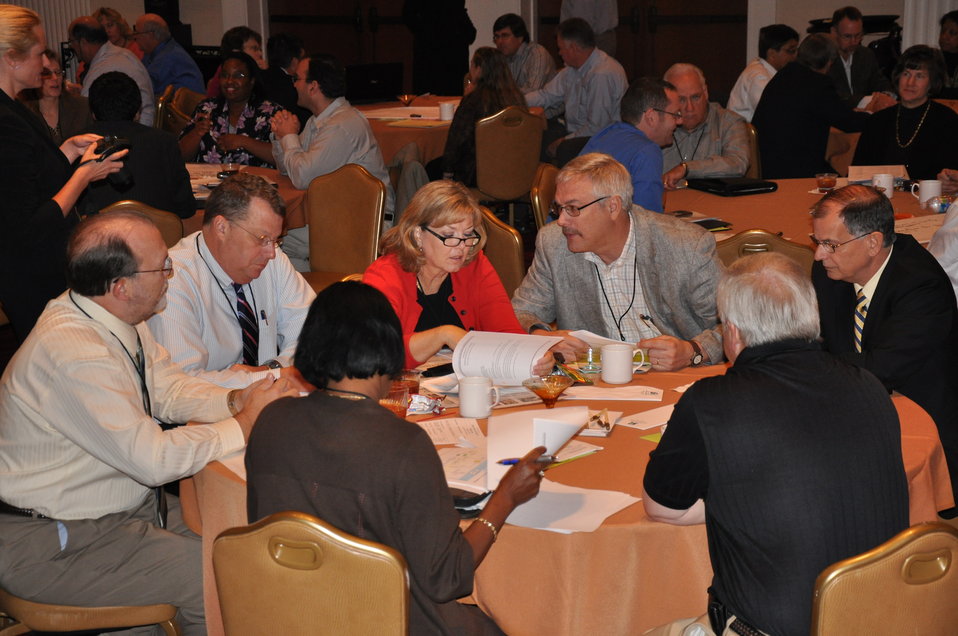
Information Exchange Breakout Session

Information Exchange participants discuss a recommended approach to effectively document and verify the completion of Recovery Act projects, one of the topics of the two-day conference.